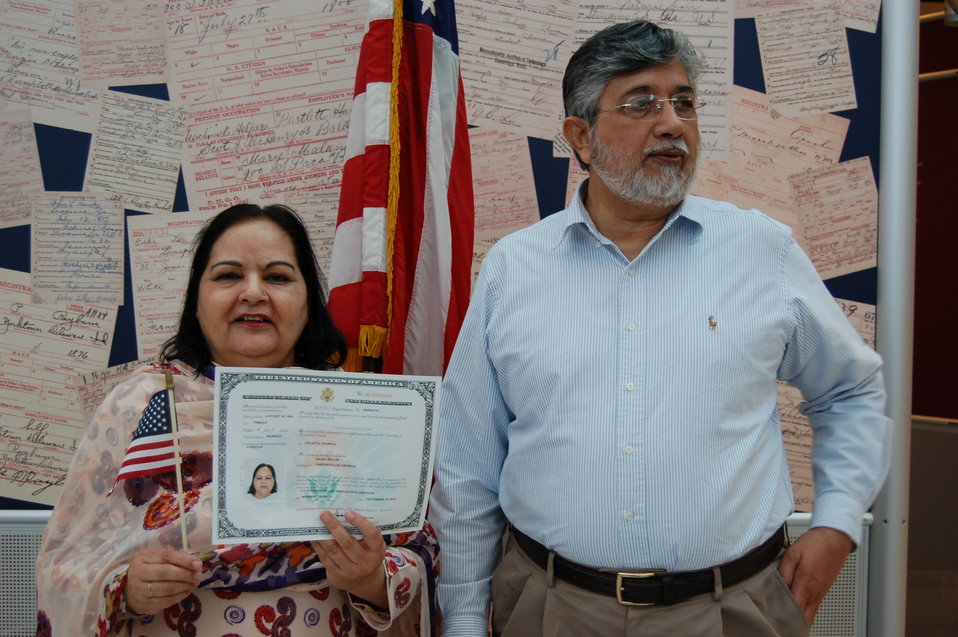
New Citizens